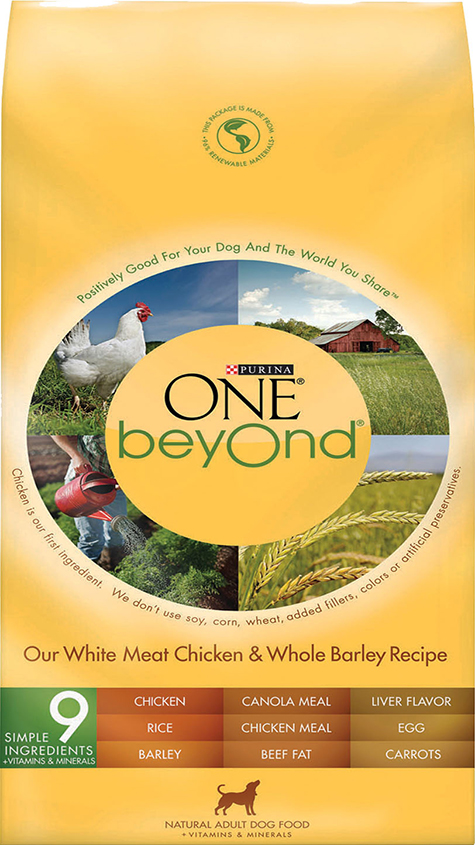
RECALLED – Purina ONE beyOnd Our White Meat Chicken and Whole Barley Recipe Adult Dry Dog Food

August 30, 2013 – Product Recall – Nestle Purina Voluntarily Recalls Limited Number of Purina ONE beyOnd Our White Meat Chicken & Whole Barley Recipe Adult Dry Dog Food Bags Due to a Potential Health Risk.